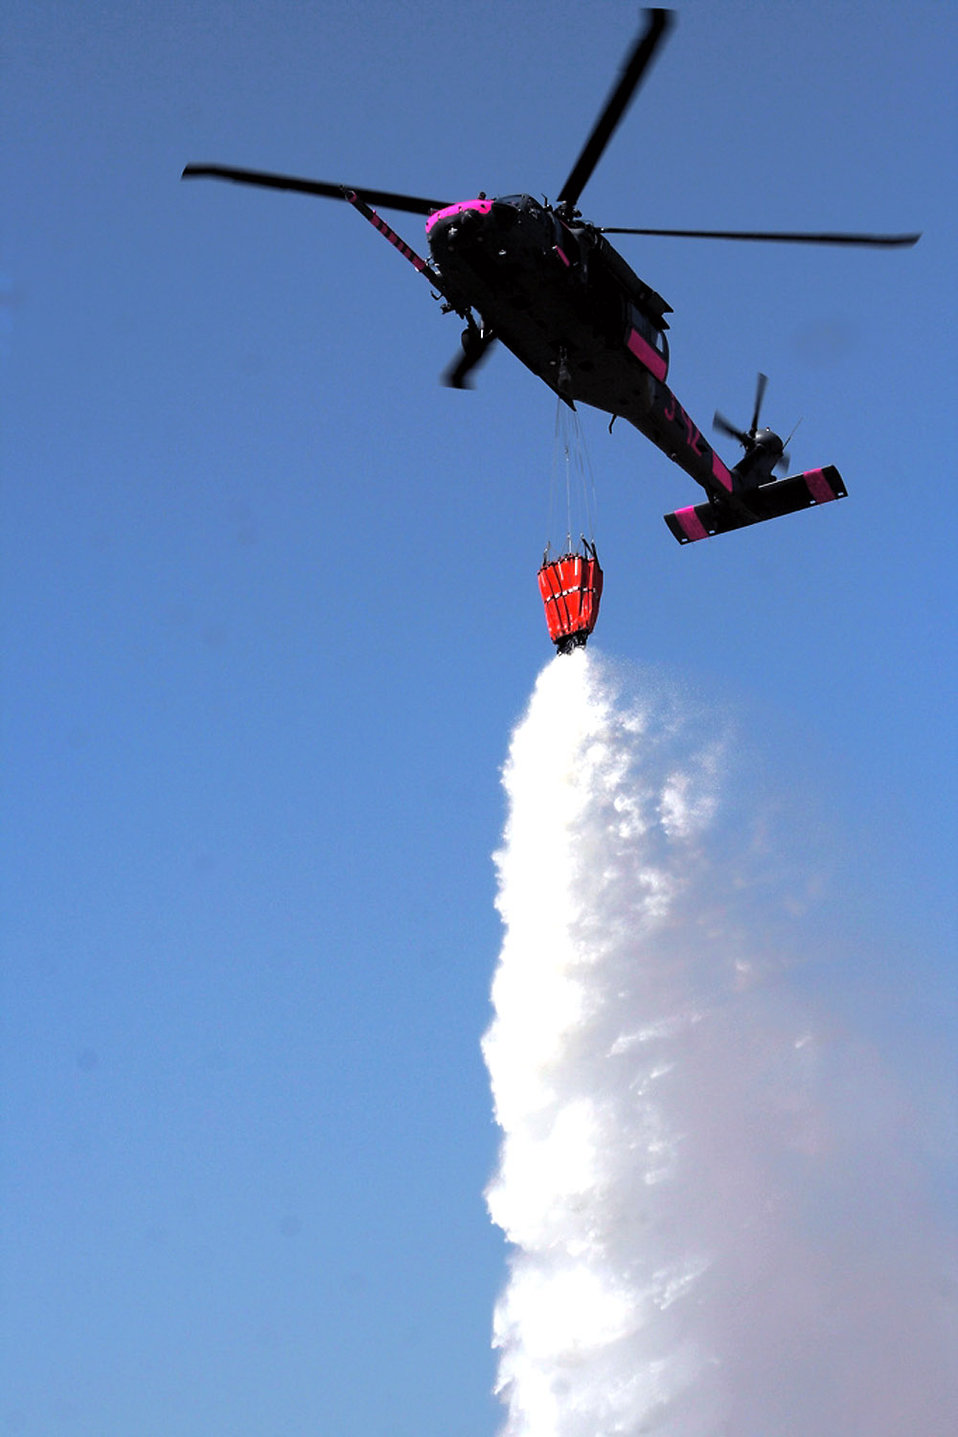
Fighting wildfires, saving lives

An HH-60G Pave Hawk releases water from an attached bucket July 2 near Sacramento, Calif. The aircrews trained with water buckets to become certified for firefighting suppression duty. The HH-60G is from the 129th Rescue Wing of the California Air National Guard.